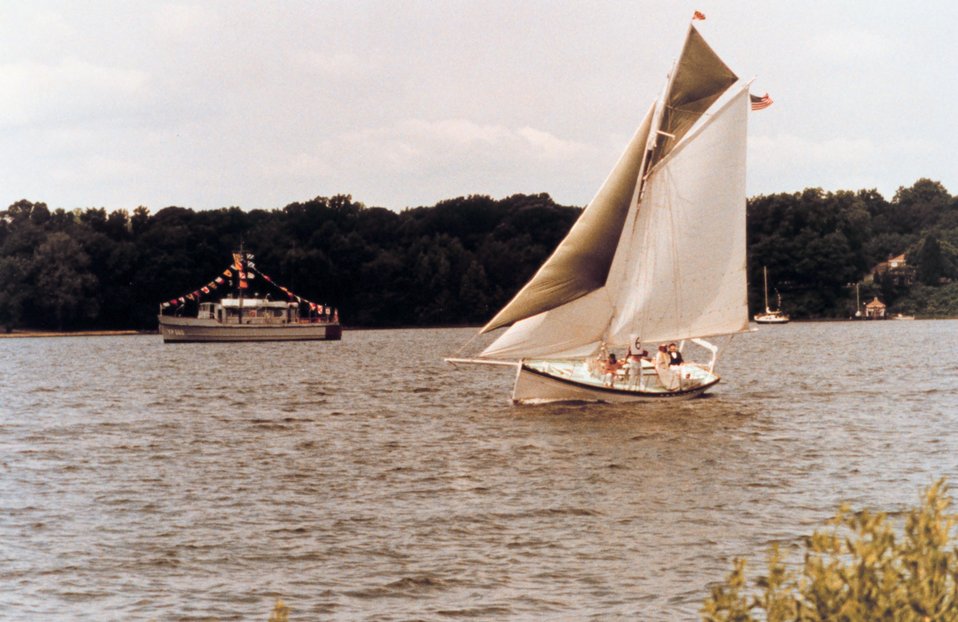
A Navy YP dressed for a holiday while the GALATEA, an old gaff-rigged cutter, travels the waters of the St. Mary's River